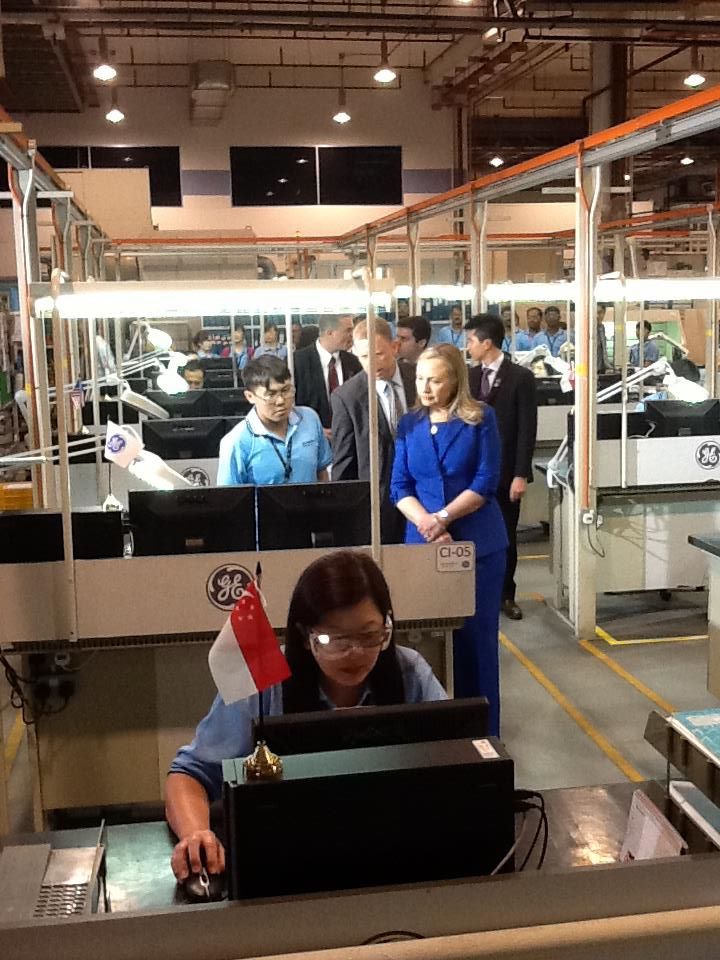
Secretary Clinton Meets With Employees from GE Aviation

U.S. Secretary of State Hillary Rodham Clinton meets with employees from GE Aviation in Singapore, November 17, 2012.